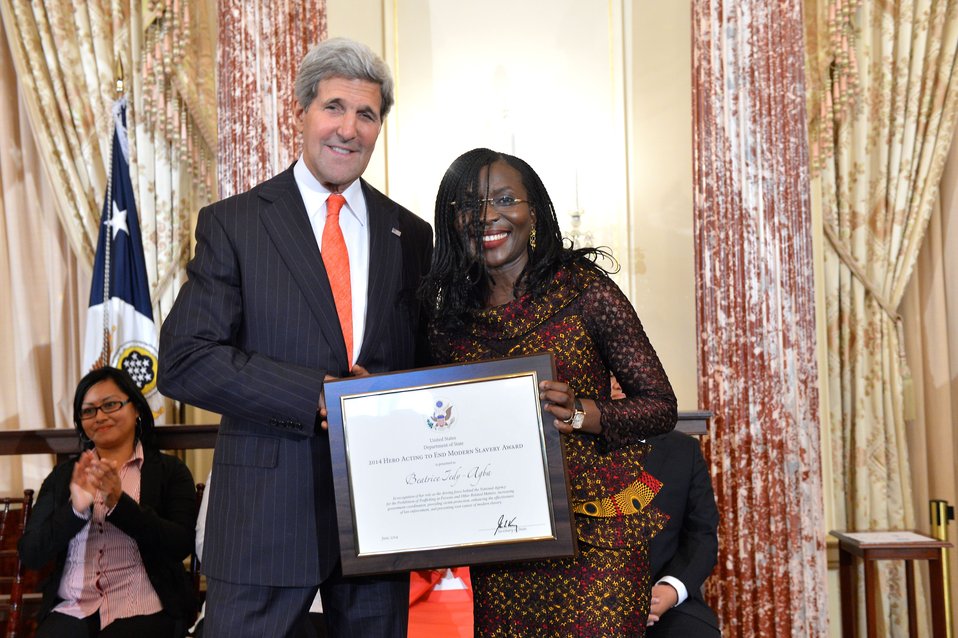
Secretary Kerry With TIP Hero Beatrice Jedy-Agba of Nigeria

U.S. Secretary of State John Kerry recognizes Beatrice Jedy-Agba of Nigeria as a 2014 Trafficking in Persons Report Hero at the U.S. Department of State in Washington, D.C., on June 20, 2014. Beatrice Jedy-Agba's work has resulted in the incorporation of human trafficking issues into national development discourse and planning in Nigeria.